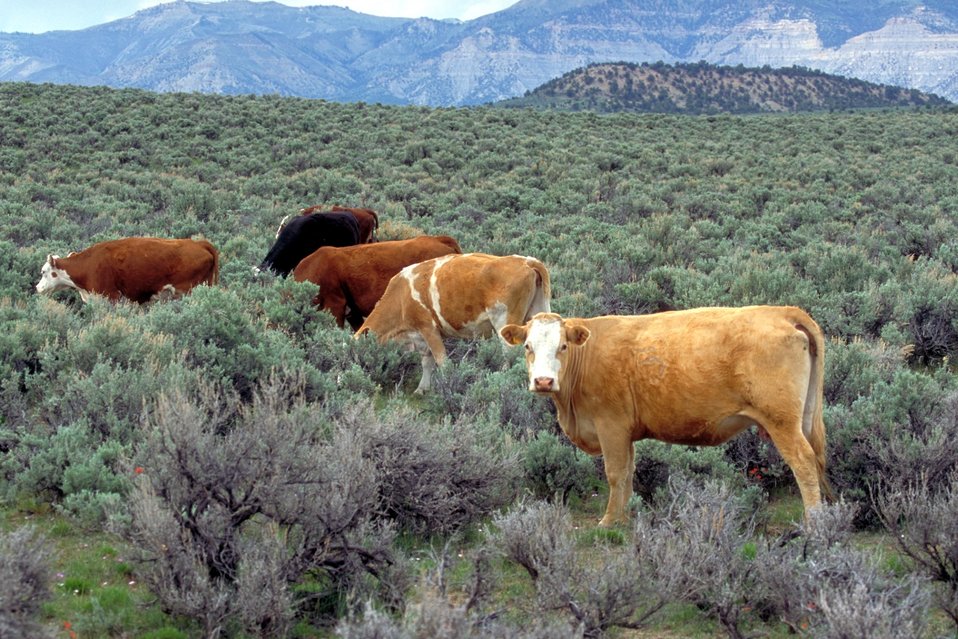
Livestock grazing on BLM lands near Price, Utah.